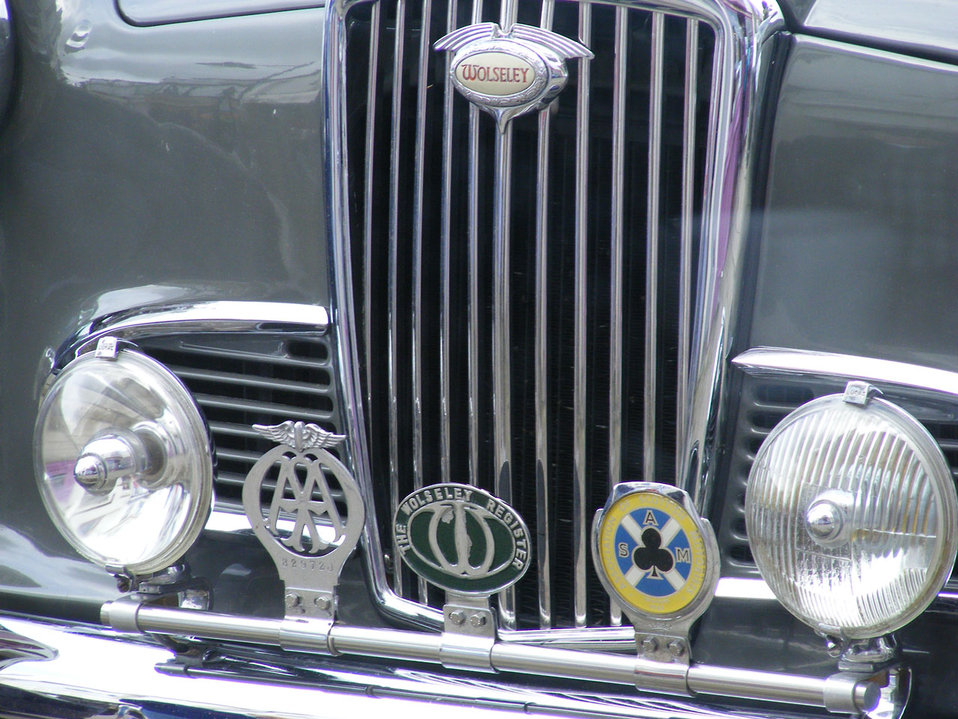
Vintage car grille

Cropped grille of vintage car & badges.